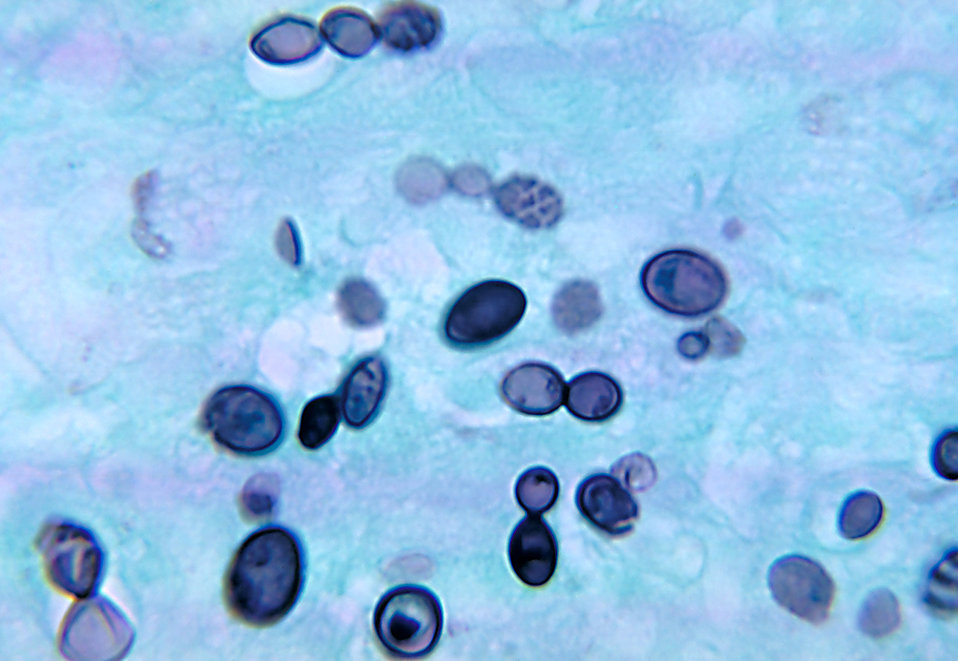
Note the histopathologic changes seen in histoplasmosis due to Histoplasma capsulatum var. duboisii.